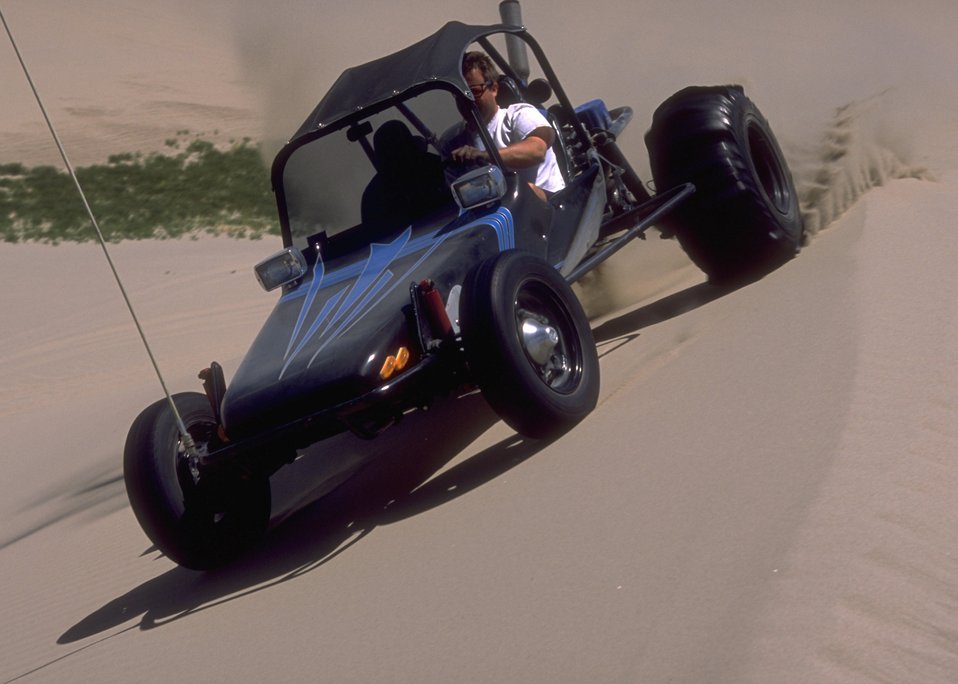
Sand Dunes OHV Area, Rock Springs Field Office.